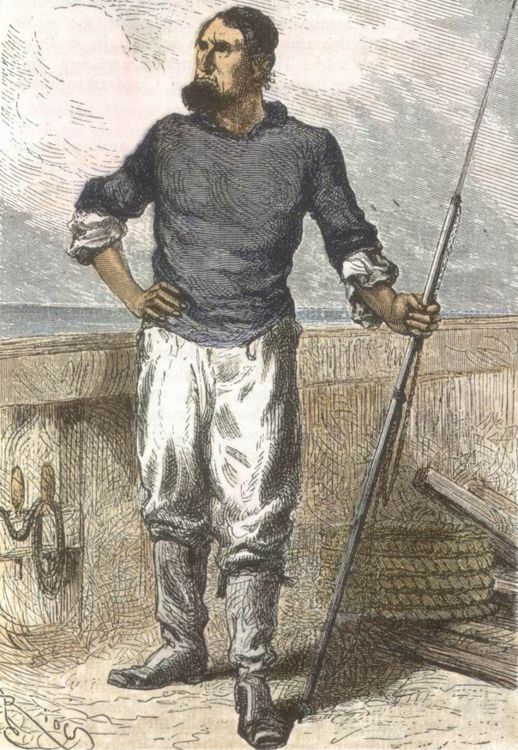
An illustration from Jules Verne's novel 'Twenty Thousand Leagues Under the Sea' (1866-69) drawn by George Roux. Polski: Ilustracja powieści Juliusza Verne'a 'Dwadzieścia tysięcy mil podmorskiej żeglugi' (tytuł przekładany także jako: 'Dwadzieścia tysięcy mil podmorskiej żeglugi około świata', '20.000 mil podmorskiej żeglugi'; 1866-69, I wyd. 1870) autorstwa Alphonse'a de Neuville lub Édouarda Riou. Français : Jules Verne 'Vingt mille lieues sous les mers' (1866-69), dessins par Alphonse de Neuville ou Édouard Riou. Orginal description taken from the book: Français : Ned Land avait environ quarante ans.